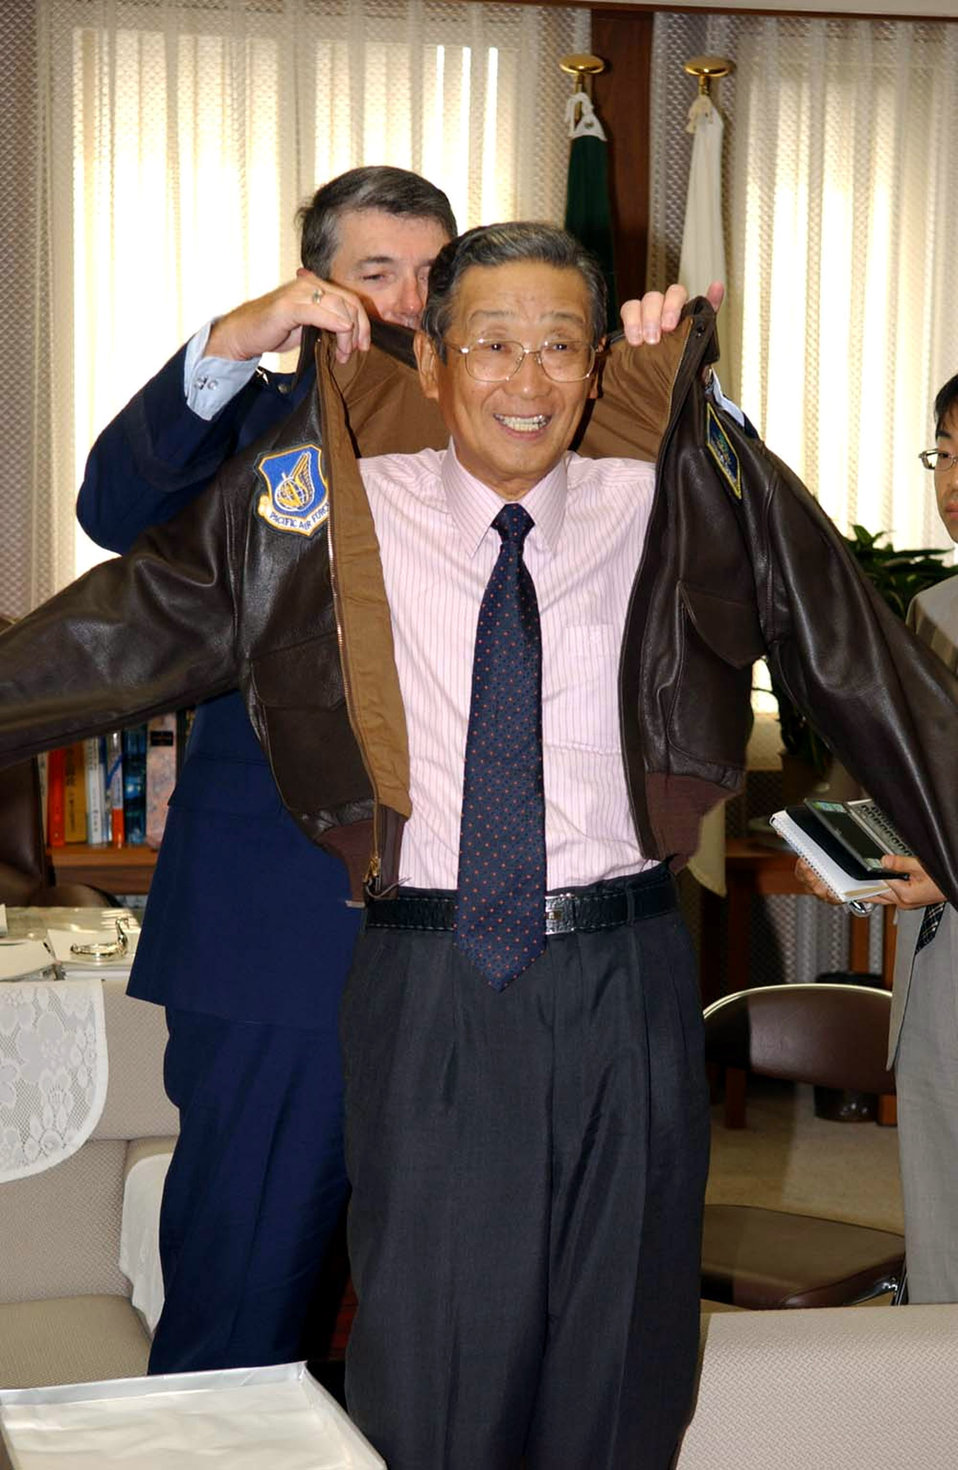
Champion for U.S.-Japan relations dies at age 66

Gen. Paul V. Hester presents Misawa City Major Shigeyoshi Suzuki with his own U.S. Air Force flight jacket in August 2006 at Misawa City, Japan. Mayor Suzuki, a longtime friend and supporter of American servicemembers, their families and the Air Force mission in Northern Japan, passed away May 1 from pneumonia at the age of 66. Mayor Suzuki served as mayor of Misawa City, representing a city of 40,000, for more than two decades and was in his sixth term upon his death. Throughout his years as mayor, he laid the foundation for strong relations between the base and the local area. General Hester is the Pacific Air Forces commander.